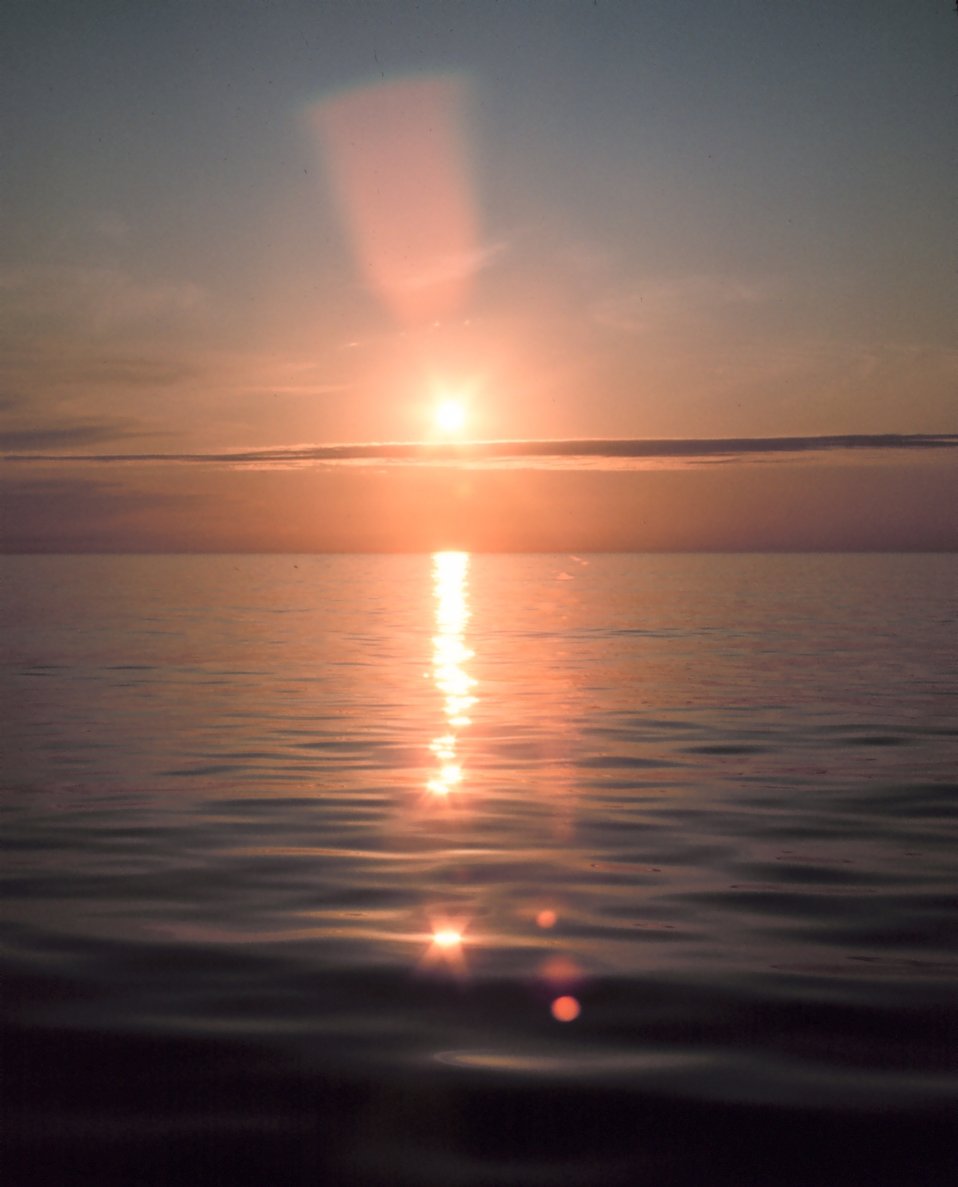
Brilliant reflection of sunlight off a calm ocean.